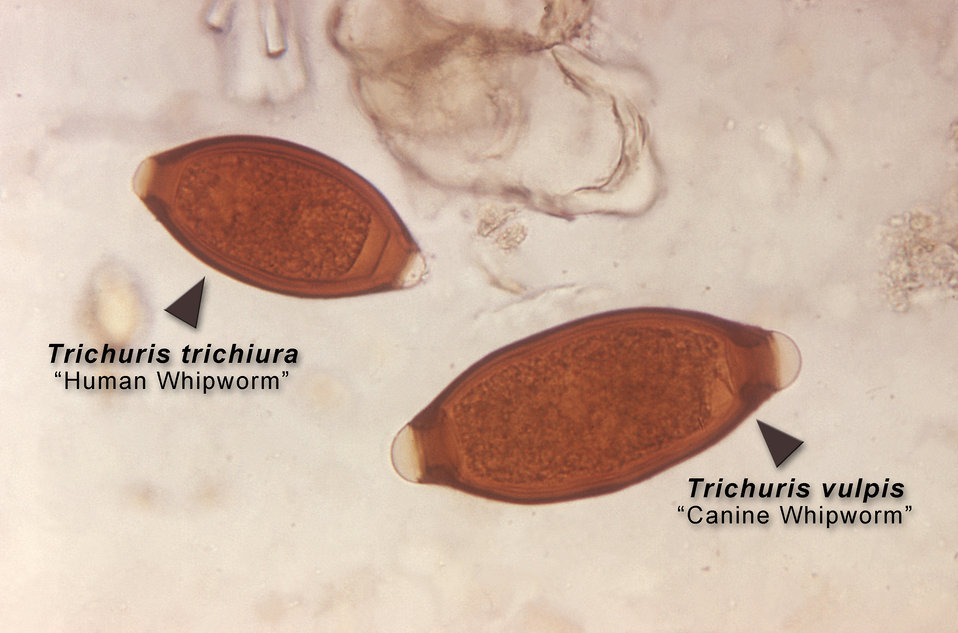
Under a high magnification, this micrograph depicts both, an egg from the 'human whipworm', Trichuris trichiura (Lt), the causal agent of 'Trichuriasis', and the 'dog whipworm', T. vulpis (Rt). Morphologically, T. vulpis ova resemble those of T. trichiura, but as is clearly visible here, are nearly twice their size.